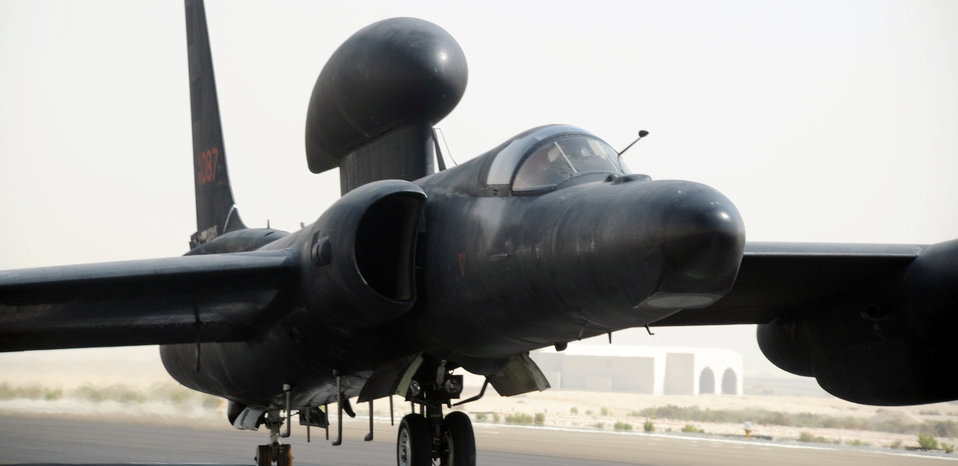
100 combat missions

Maj. William Gottenberg, a pilot with the 99th Expeditionary Reconnaissance Squadron, taxies a U-2 Dragon Lady in after completing his 100th U-2 combat mission from a base in Southwest Asia March 9, 2010. Major Gottenberg is deployed from Beale Air Force Base, Calif.